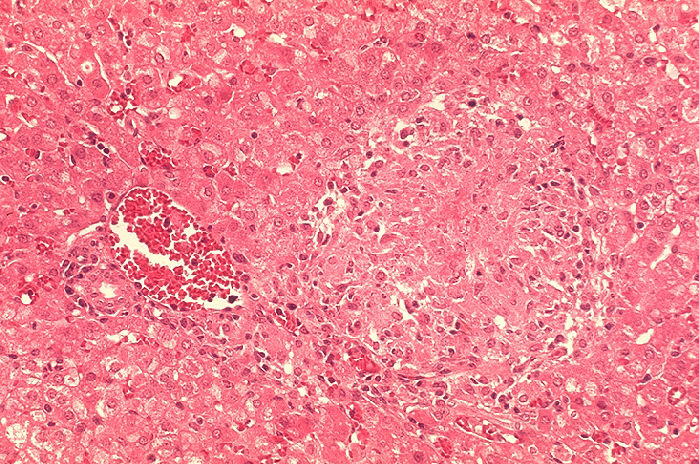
Histopathology of guinea pig liver in experimental Brucella suis infection.